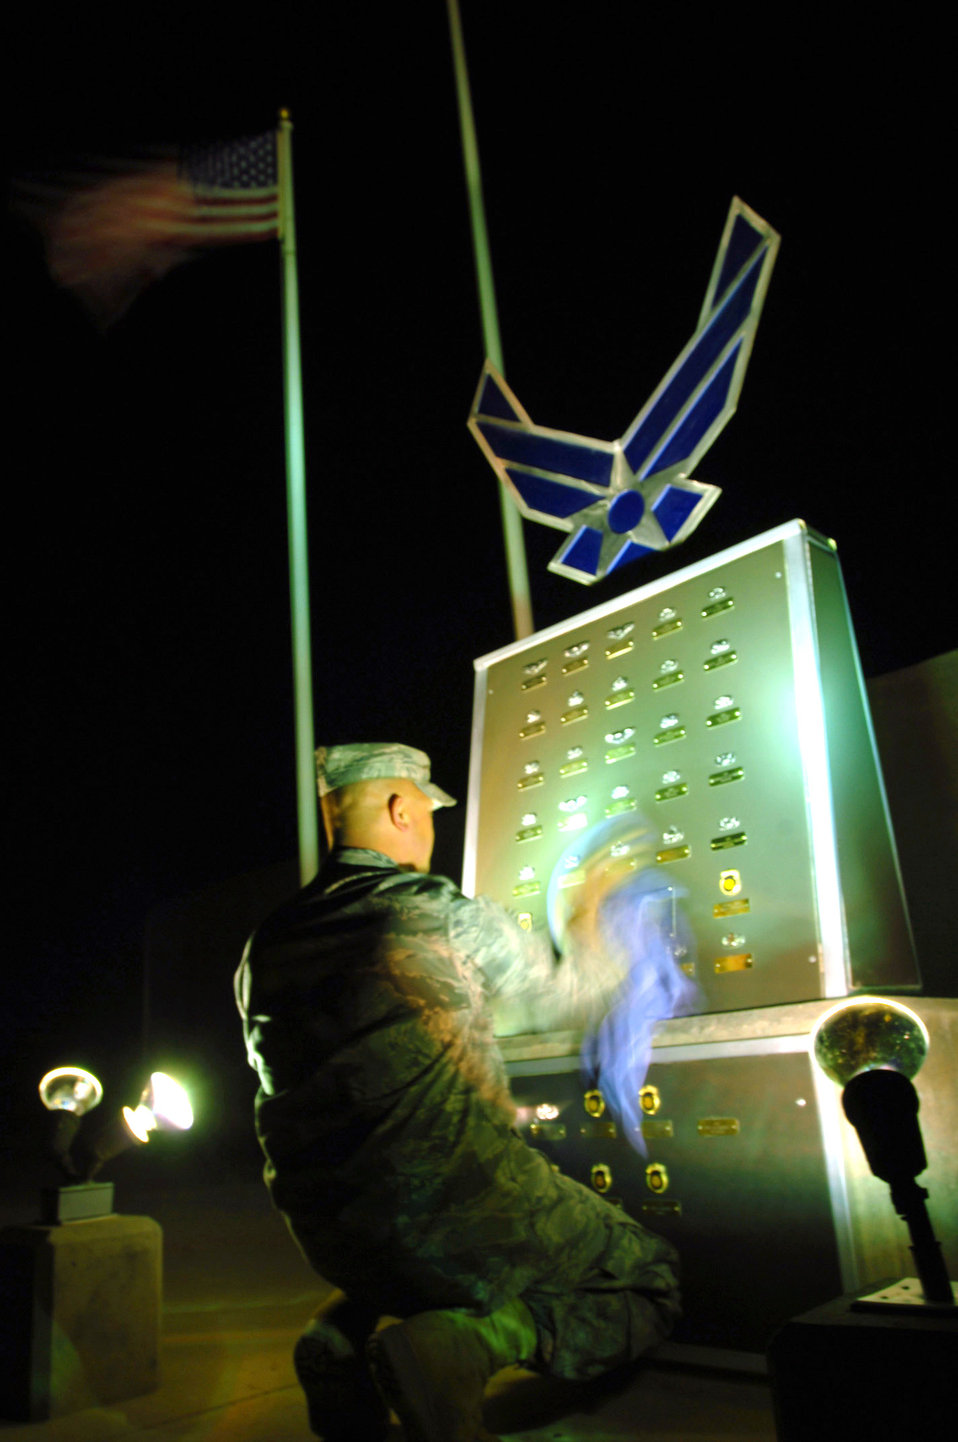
Airmen remember the price of freedom

A technical sergeant deployed to the 407th Air Expeditionary Group cleans the Airmen's Memorial dedicated to those who have fallen in Operation Iraqi Freedom March 20 at Ali Base, Iraq. He cleans the memorial at least once a week and after every sand storm to make sure all the badges and nameplates shine.